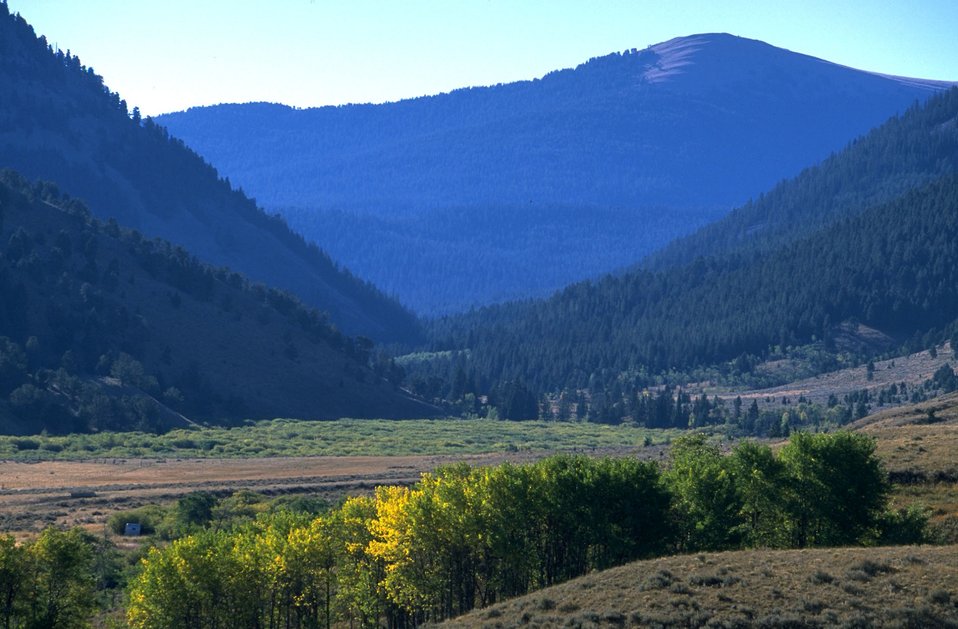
Aspen filled valley with forested slopes and mountains in the background